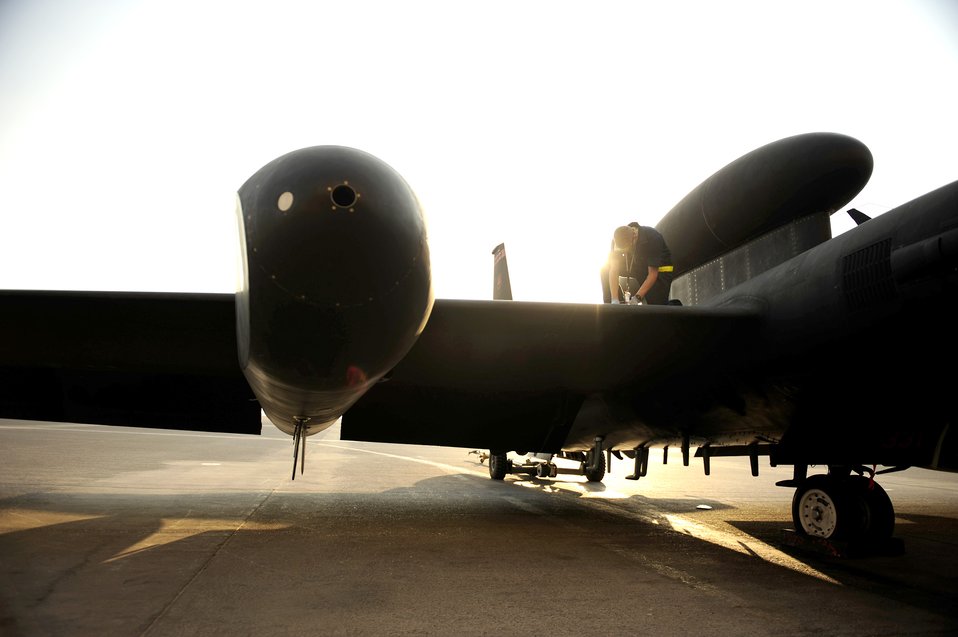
Technicians work on the Dragon Lady

Maintenance technicians assigned to the 380th Expeditionary Aircraft Maintenance Squadron, work in and around the U-2 Dragon Lady Nov. 23, 2010, at an air base in Southwest Asia. The Airmen are assigned to the 380th Expeditionary Aircraft Maintenance Squadron.